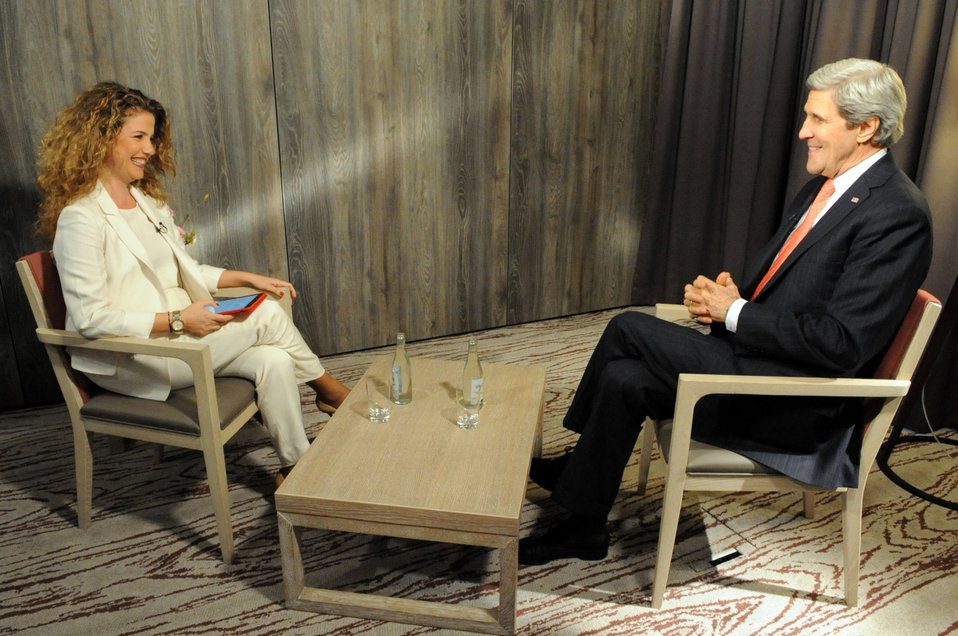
Secretary Kerry Sits With Al Arabiya for Interview Amid World Economic Forum

U.S. Secretary of State John Kerry laughs with Al Arabiya Correspondent Rima Maktabi before they start an interview amid the World Economic Forum in Davos, Switzerland, on January 23, 2014.